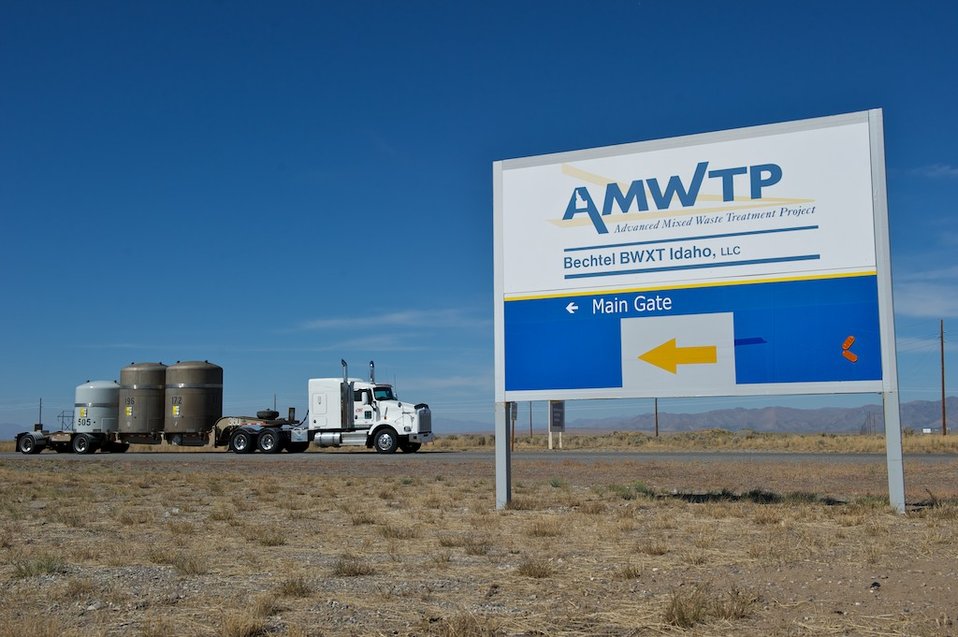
10,000th Shipment

The 10,000th shipment of TRU waste leaving Idaho bound for WIPP. The waste was shipped from the Advanced Mixed Waste Treatment Project.